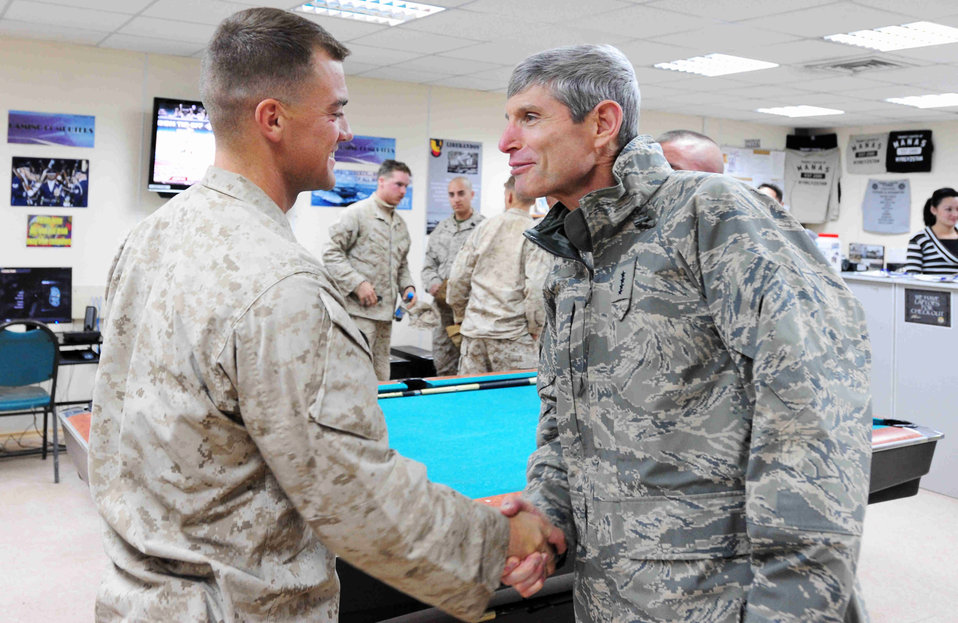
Air Force Chief of Staff Gen. Norton Schwartz meets a Marine Nov. 26, 2009, at the Transit Center at Manas, Kyrgyzstan.